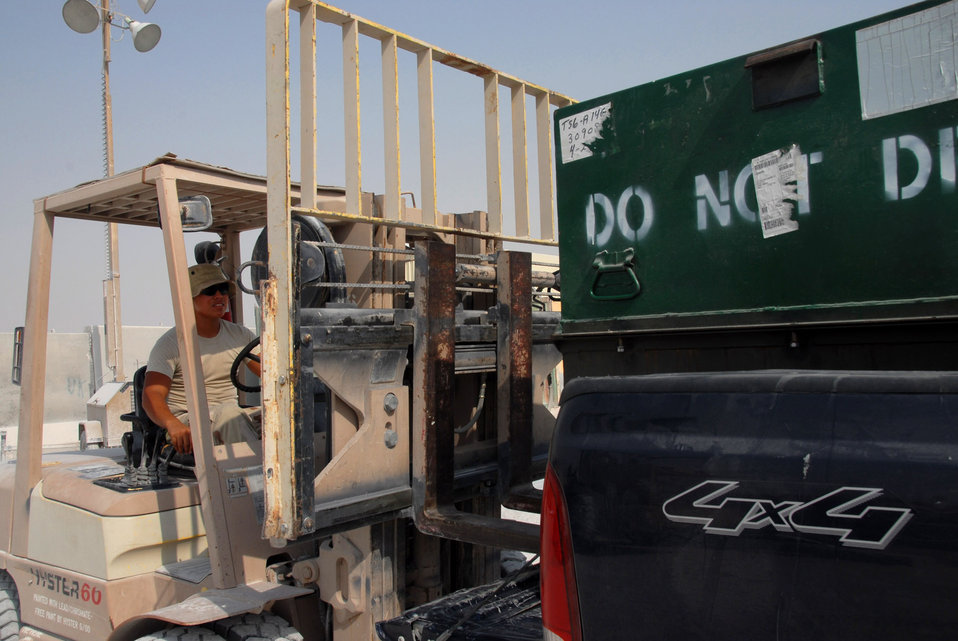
Cargo flight keeps warfighters moving

Senior Airman Nick Mendoza uses a forklift to unload a container of cargo from a pickup truck Aug. 8 in Southwest Asia. Airman Mendoza is assigned to the 379th Expeditionary Logistics Readiness Squadron Cargo Movement Flight. Airmen of the flight ship anything the military uses anywhere in the world.